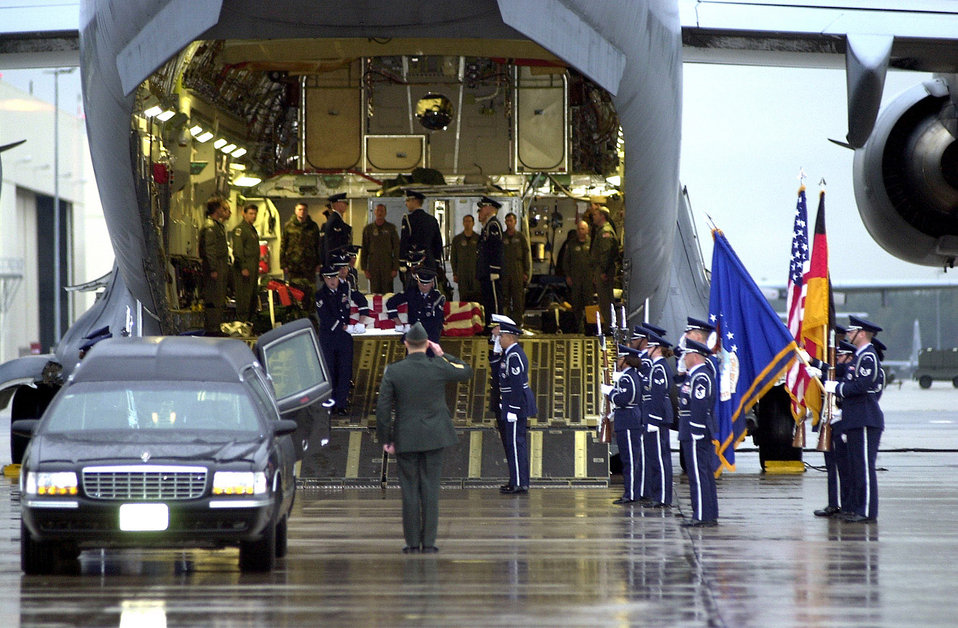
Sailors Returned Home

RAMSTEIN AIR BASE, Germany -- Members of the 86th Airlift Wing Honor Guard carry the remains of fallen sailors from the USS Cole out of a C-17 Globemaster III here, Oct.13, 2001. The Navy destroyer was in the port of Aden, Yemen, when the incident occurred.